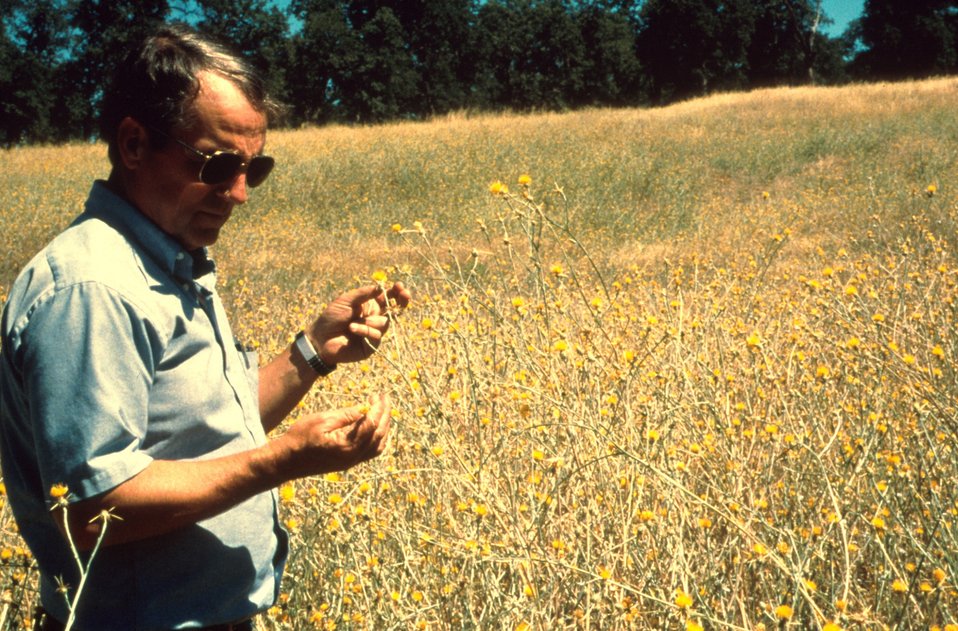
Native vegetation competing with Yellow Starthistle Idaho vegetation Plants in BLM